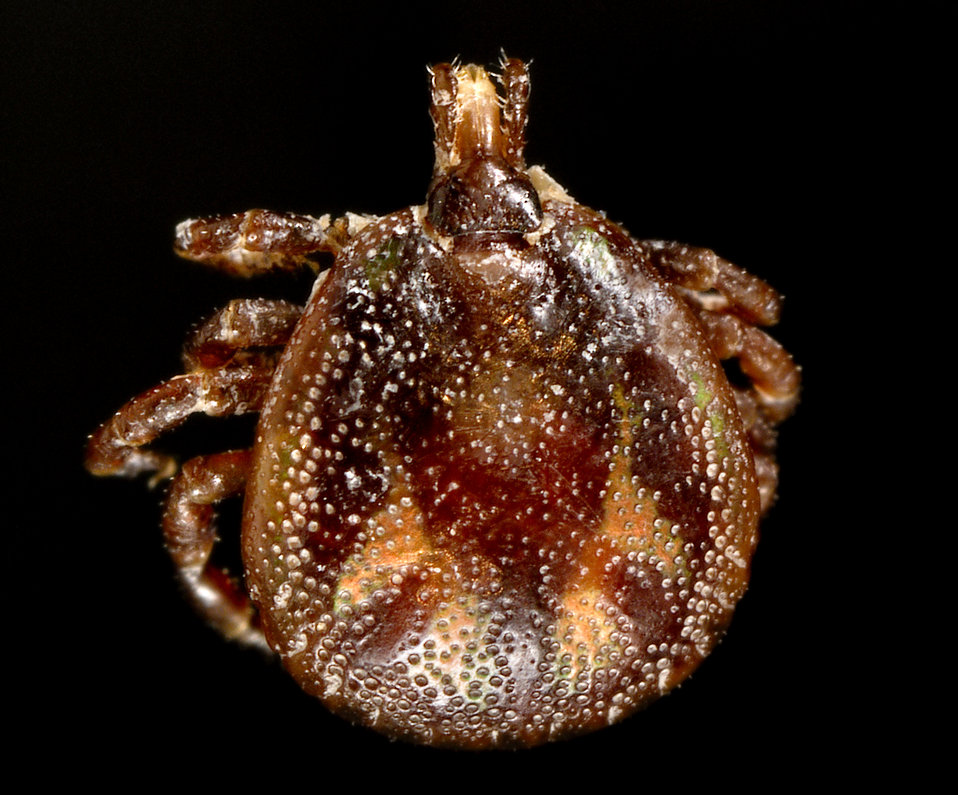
This photograph depicted a dorsal view of a 'monitor lizard tick', Amblyomma exornatum, formerly known as Aponomma exornatum. Native to Africa, this is a reptilian tick, and as the name suggests, is mainly a parasite of monitor lizards. The four pairs of jointed legs, places these ticks in the Phylum Arthropoda, and the Class Arachnida.